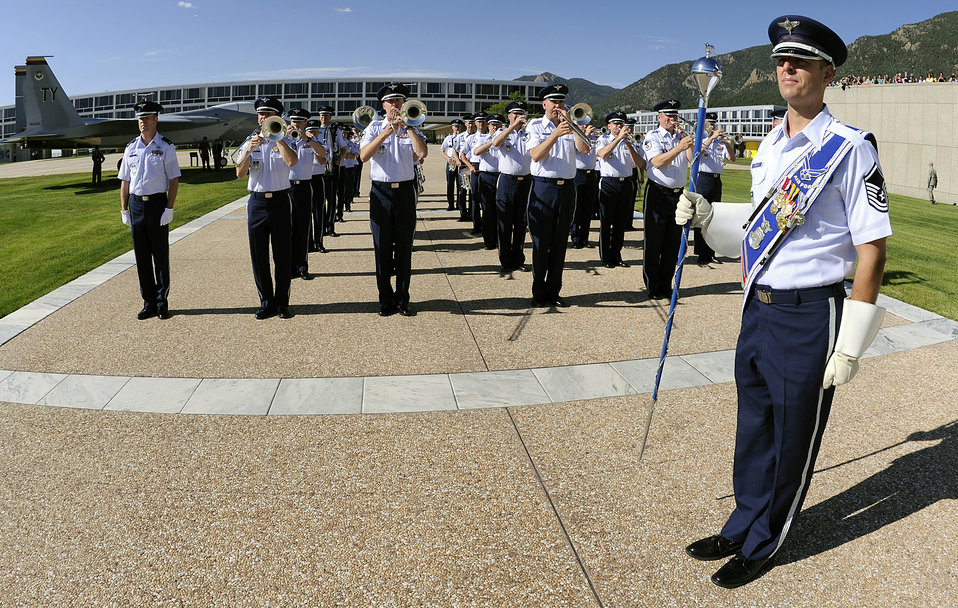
Air Force Academy Band

The U.S. Air Force Academy Band performs for the Class of 2014 swearing-in ceremony at the Academy in Colorado Springs, Colo., June 25, 2010. The Air Force Academy band, one of 12 active-duty Air Force bands around the world, is stationed at nearby Peterson Air Force Base.